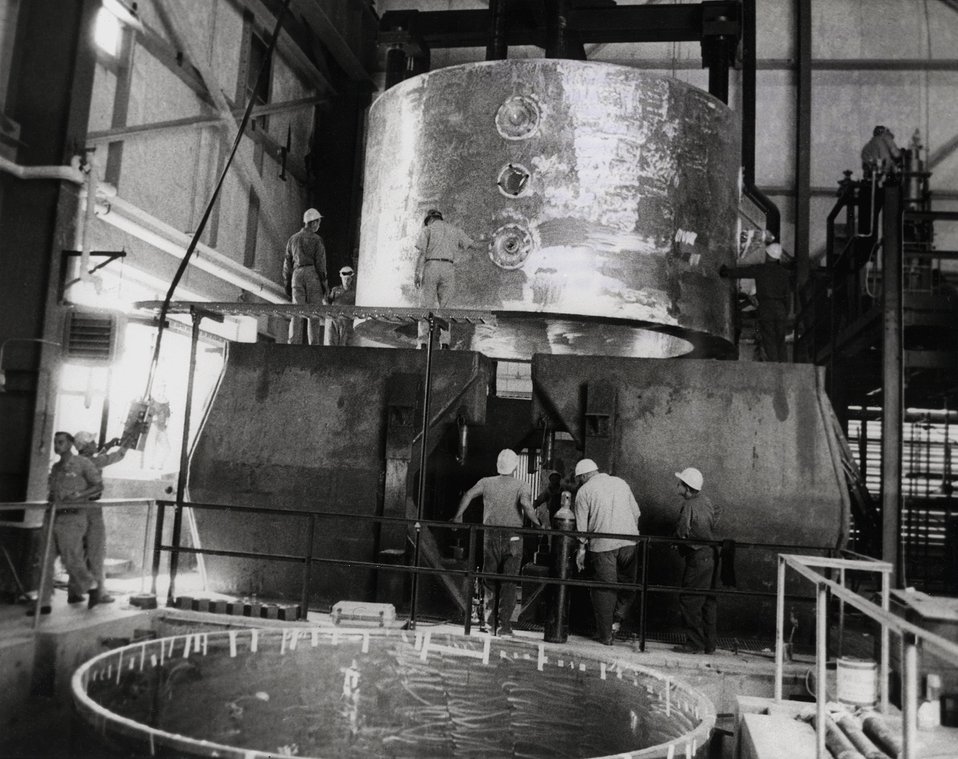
Coils of the world's largest superconducting magnet are lowered into their steel yoke at Argonne.
c.1969